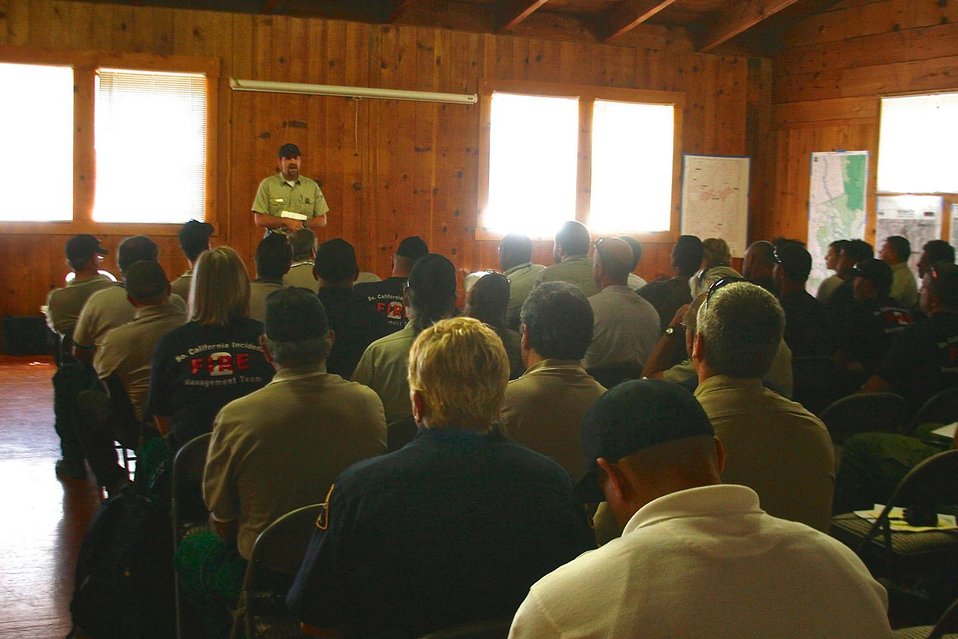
Fire crews receive briefing at the Corral Complex Fire Incident Command Post. The Corral Complex Fire in the Six Rivers National Forest near the Trinity Alps Wilderness area in California began on Aug. 10, 2013 by lightning and has consumed approximately 4, 450 acres.